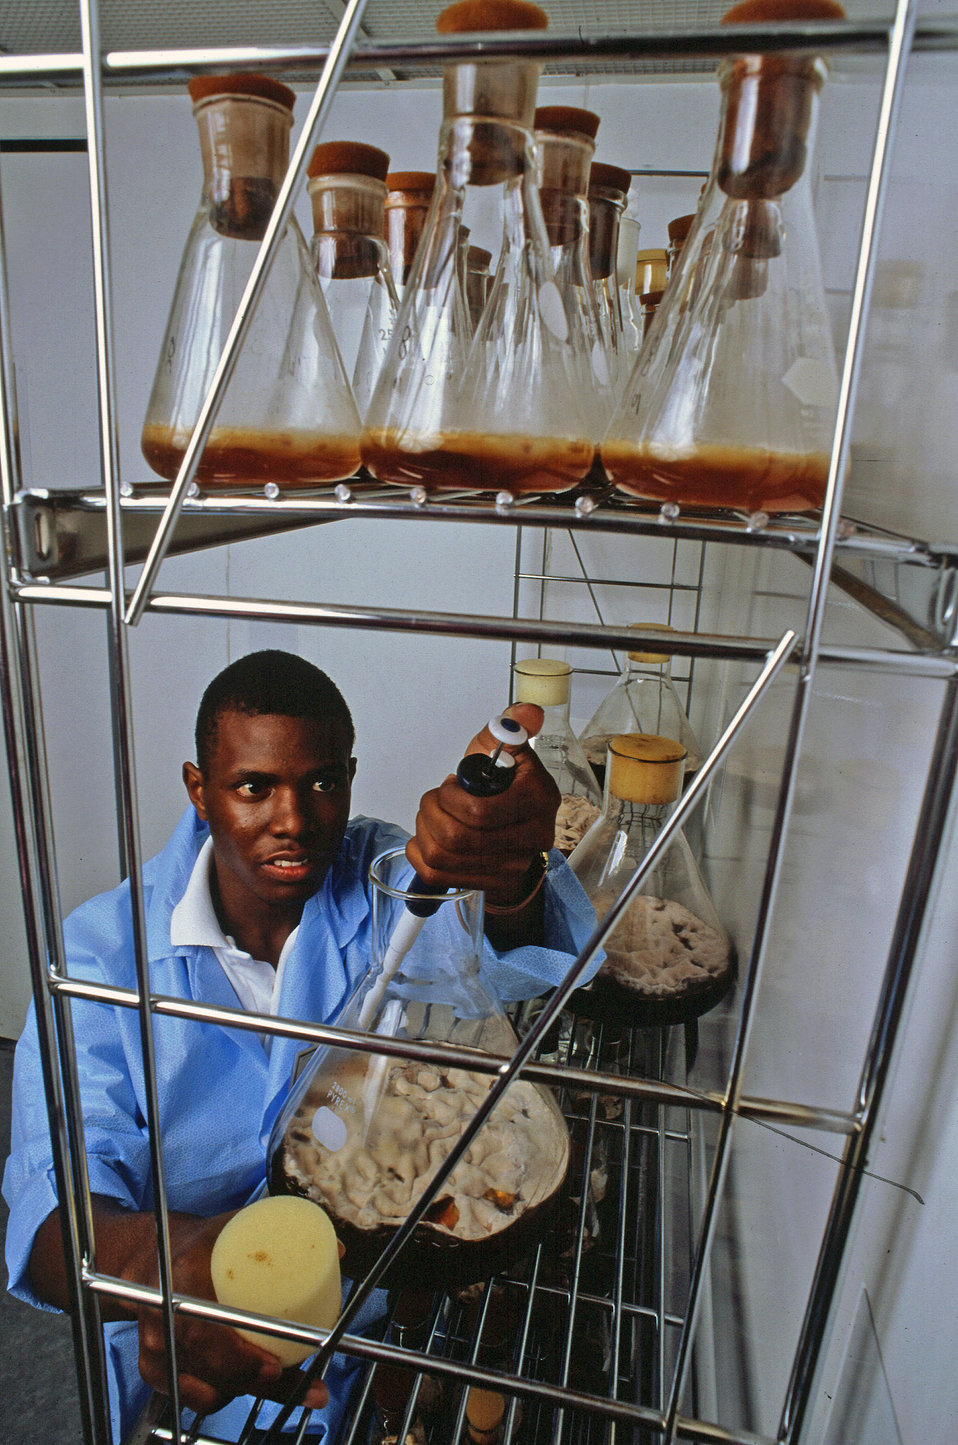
John F. Kennedy High School student Velton Welch collects a sample of a fungal culture at the U.S. Department of Agriculture (USDA) Agriculture Research Service (ARS) Southern Regional Research Center in New Orleans, LA.